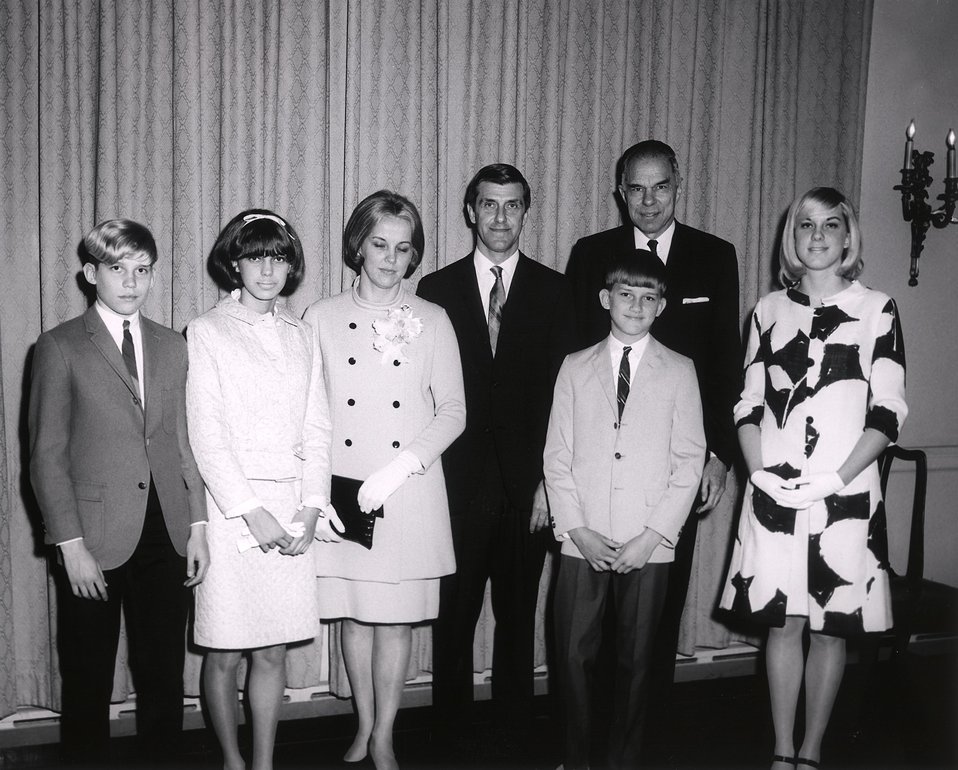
7th E.O. Lawrence Award Ceremony, April 27, 1966, Wash., D.C. Chairman Seaborg, Dr. and Mrs. Huizenga and children.